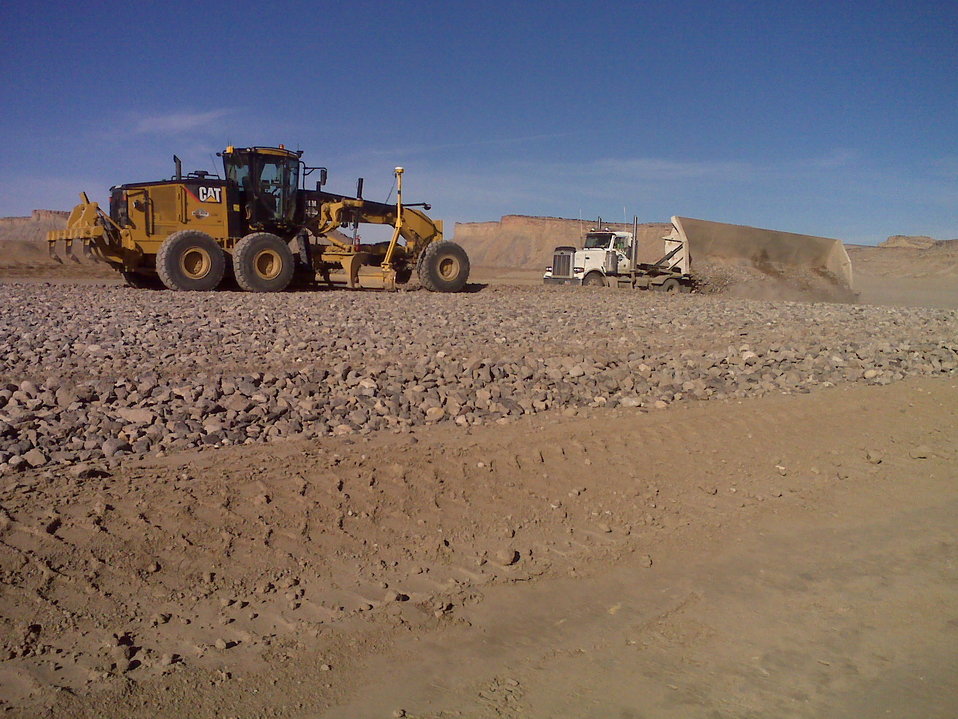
Cap Rock is being placed for final layer in the Disposal Cell Cap